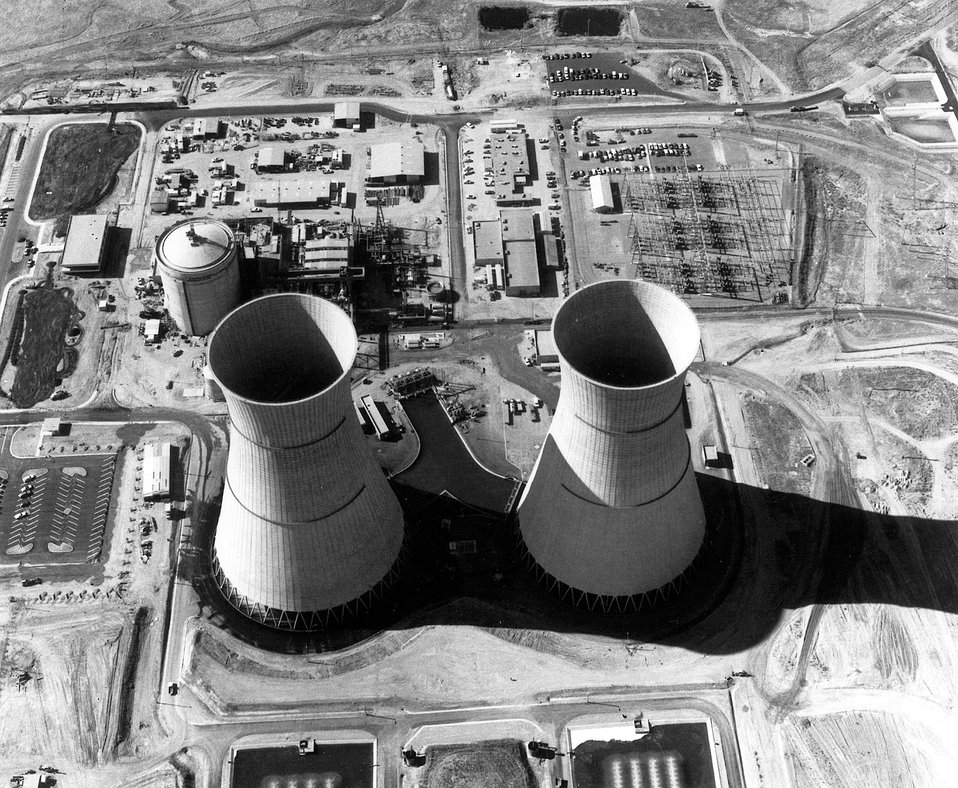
Rancho Seco Nuclear Generating Station, Unit 1, near Clay Station, Calif.. The Sacramento Municipal Utility Districts generating station employ's a Babcock & Wilcox pressurized water reactor and will generate 913,000 Kw electricity. It is expected to be in operation in 1974. Circa 1974.